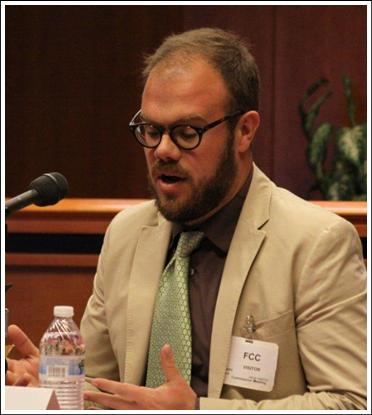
Richard Abisla

Panel 3: Discussion of Best Practices Learned from Implementing Broadband Adoption Programs Within Different Communities